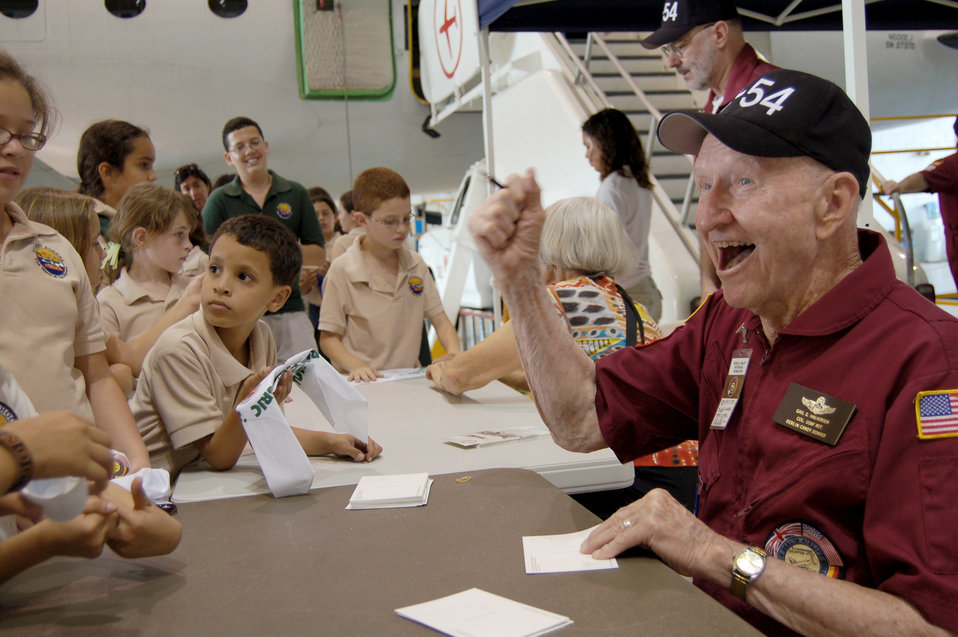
Candy Bomber Col. Gail Halverson

Retired Col. Gail Halvorsen signs autographs for children in Puerto Rico at one of his annual visits. Colonel Halvorsen, also known as the Berlin Candy Bomber, flew C-54 Skymasters during the Berlin Airlift and parachuted candy to children from his airplane.